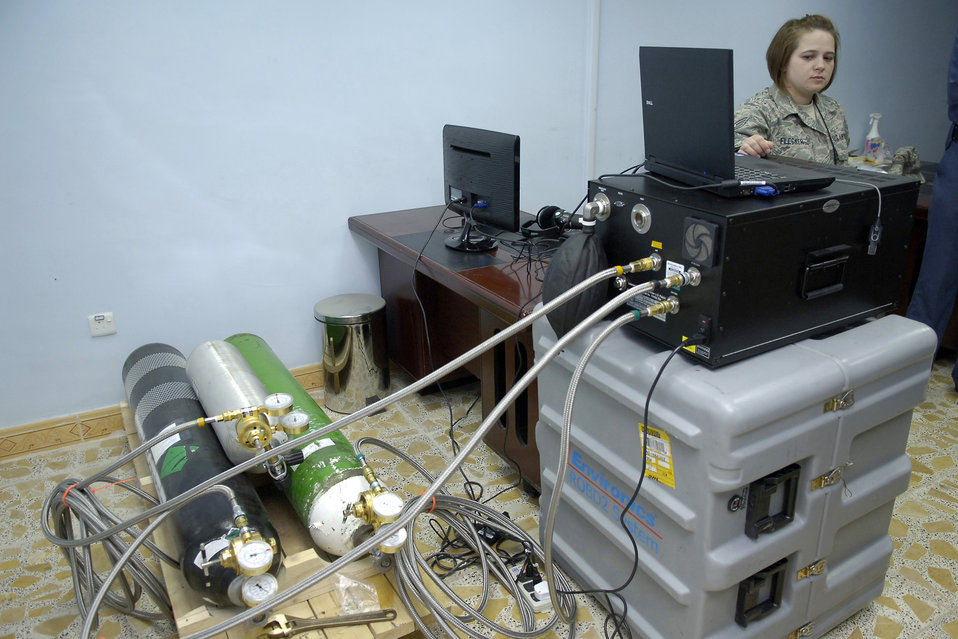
ROBD2

Tech. Sgt. Jennifer Flecker prepares Iraq's first reduced oxygen breathing device for a demonstration March 14, 2011, in Bagdhad. Sergeant Flecker is an aerospace operational physiology technician deployed to teach Iraqi airmen to use the device, which is designed to take the place of the altitude chamber for pilot refresher training.